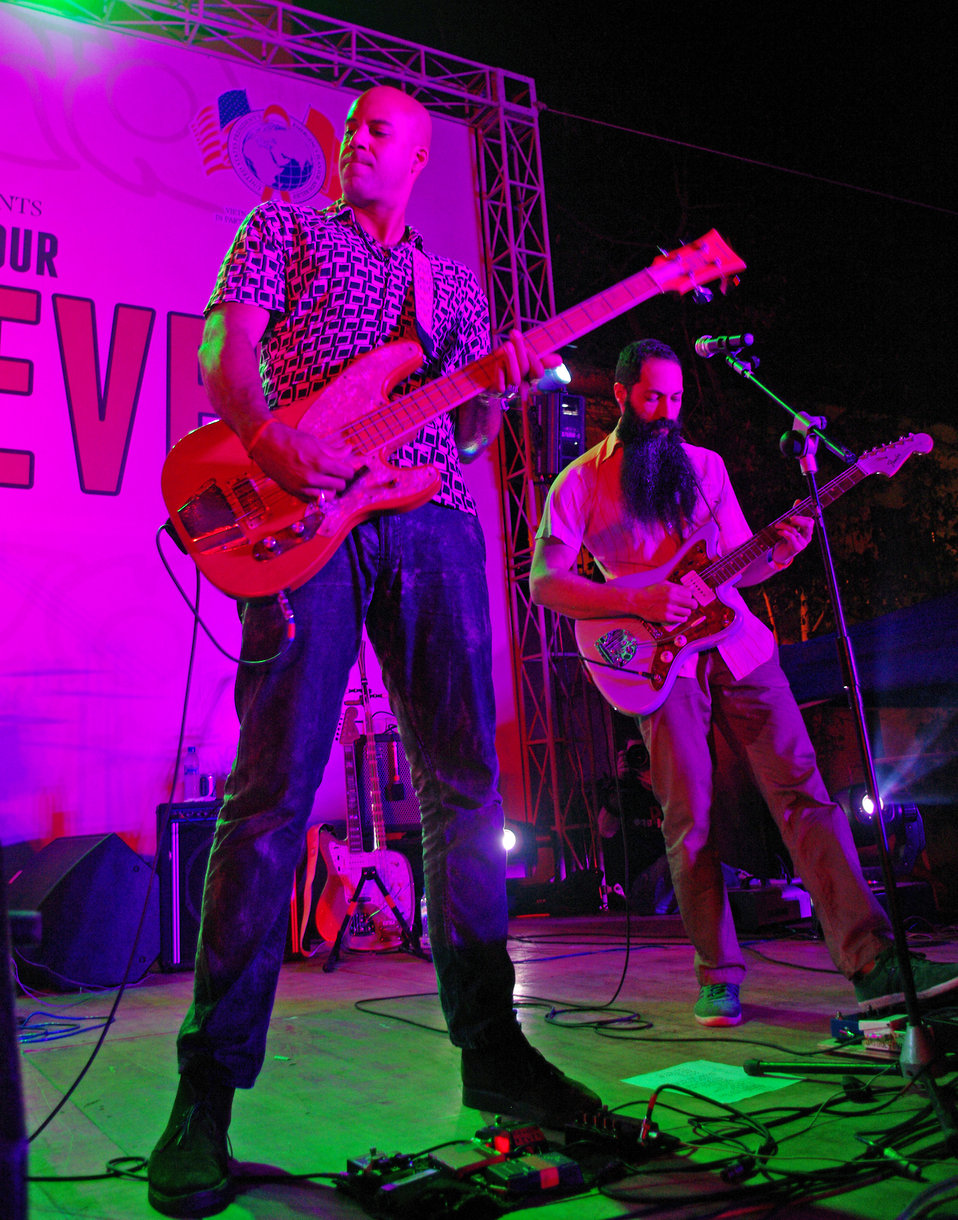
PEPFAR, U.S. Embassy Host Dengue Fever Concert in Hanoi